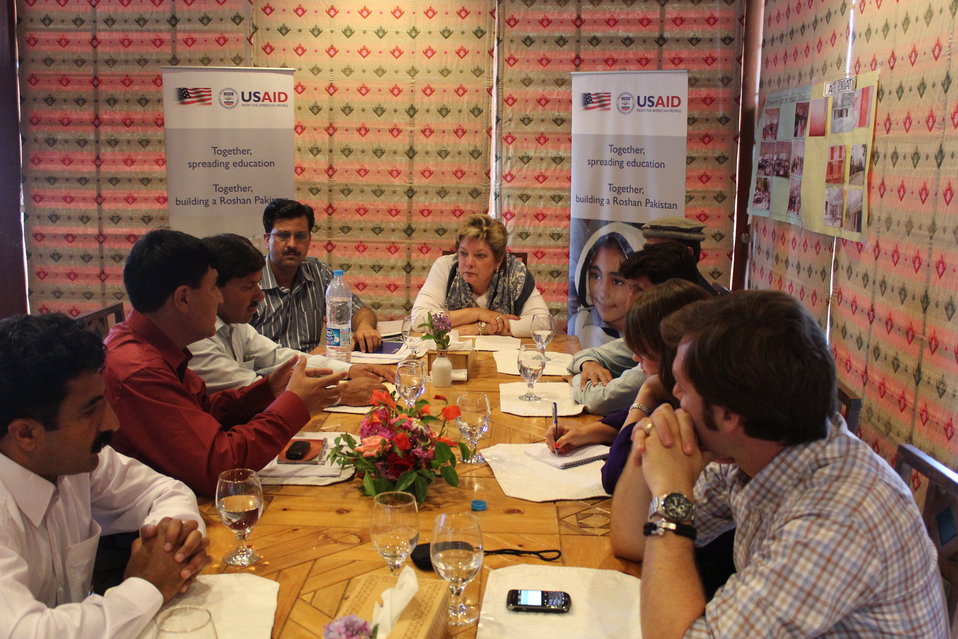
Deputy Director Karen Freeman’s visit to Gilgit Library

Karen Freeman visited the Municipal Gilgit Library on Monday, July 9. She was accompanied by other USAID staff and the staff from the Ambassador’s Fund Program. A the library, she met with Deputy Commissioner of Gilgit, Mr. Arqam and library staff, toured a photo display, and had an informal discussion with the library staff and community members about the USAID-funded project. Library staff showed the equipment funded by USAID (computers, internet, scanners, etc). The visit concluded by a Q & A session with media.